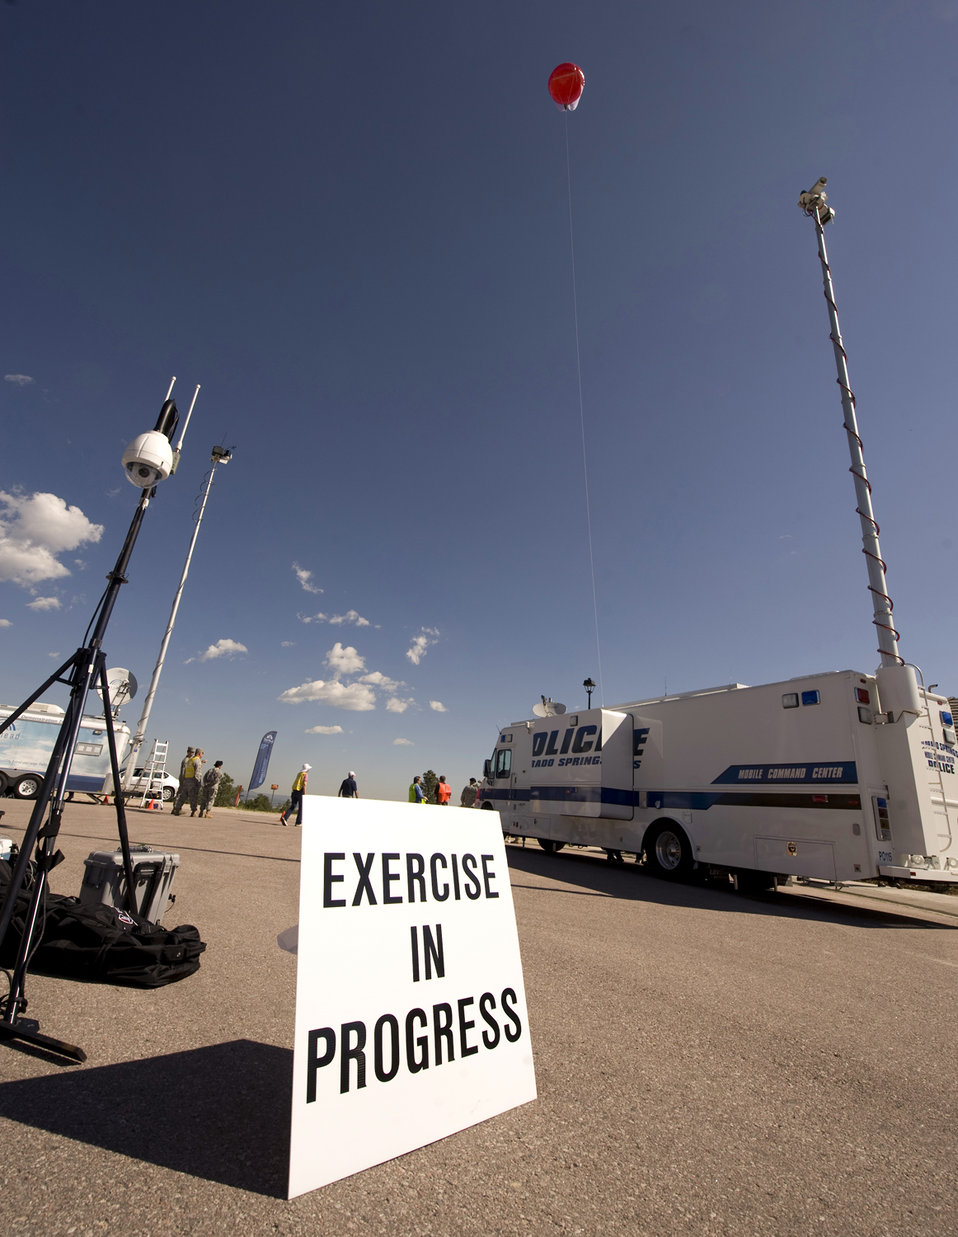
Coalition Warrior Interoperability Demonstration

A mobile command post and other emergency services are tested during the Coalition Warrior Interoperability Demonstration June 16, 2010, in Colorado Springs, Colo.